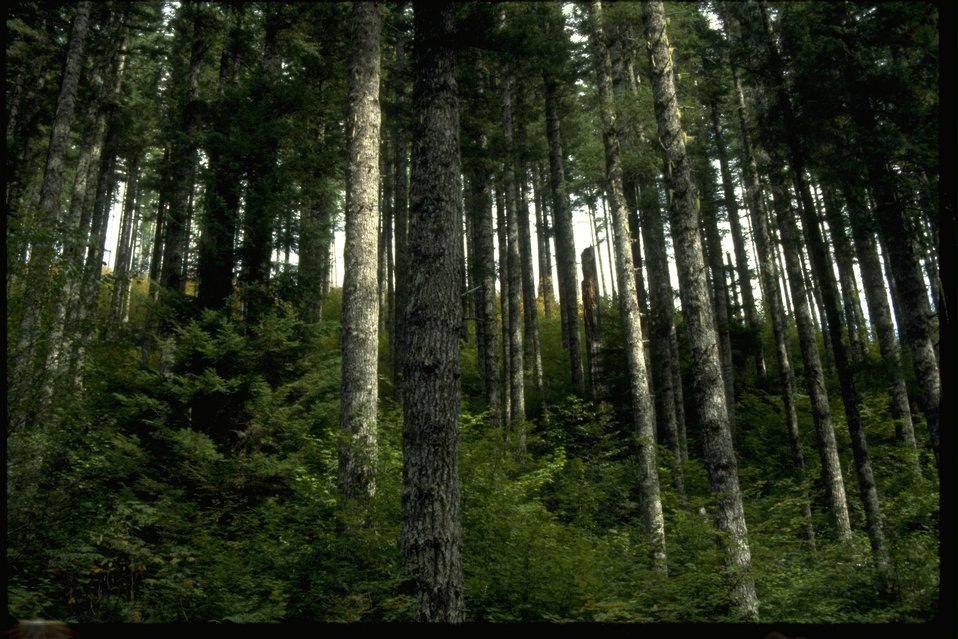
A block of trees on BLM land in the Nestucca area.